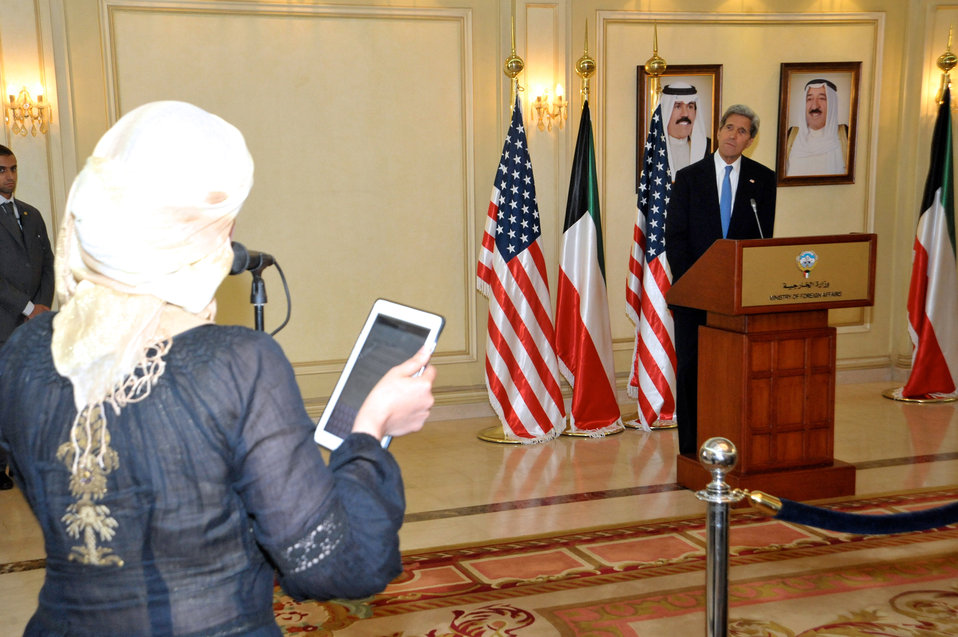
Secretary Kerry Takes a Question From a Kuwaiti Journalist

U.S. Secretary of State John Kerry takes a question from a Kuwaiti journalist during a joint news conference with Kuwaiti Deputy Prime Minister and Foreign Minister Sheikh Sabah Al-Khalid Hamad Al-Sabah after meeting in Kuwait City, Kuwait, on June 26, 2013.